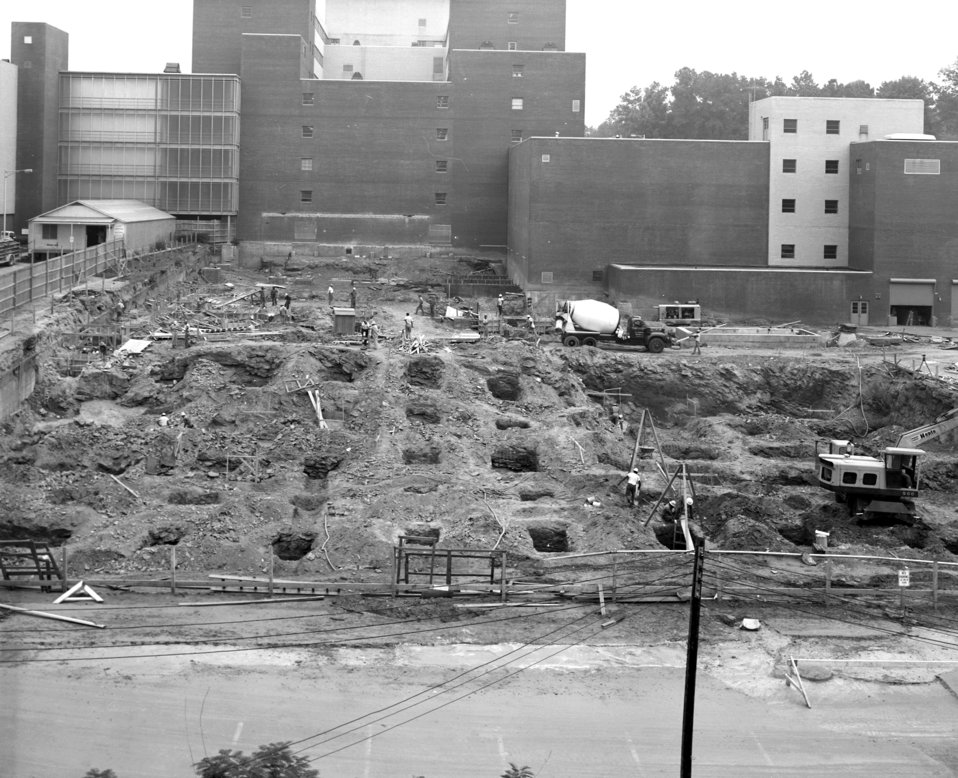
Lab additions E & D under construction at the Roybal Campus, Clifton Road, in 1964 (looking northeast).